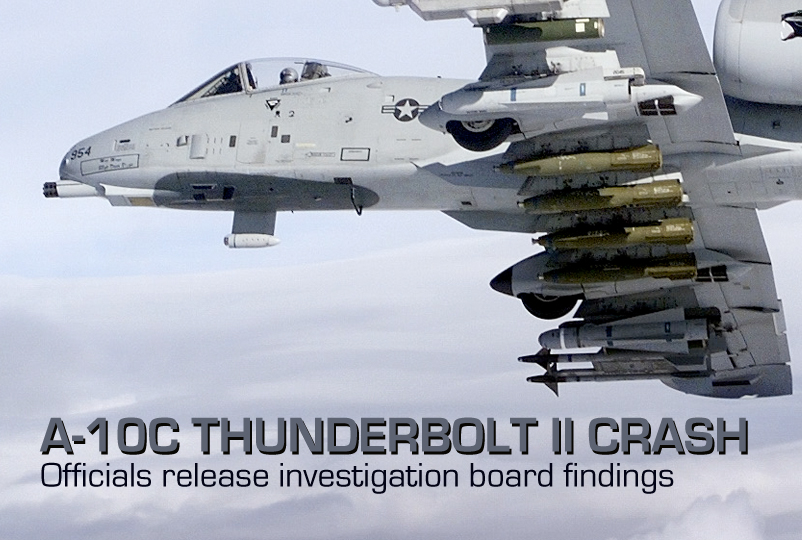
A-10C Thunderbolt II Crash